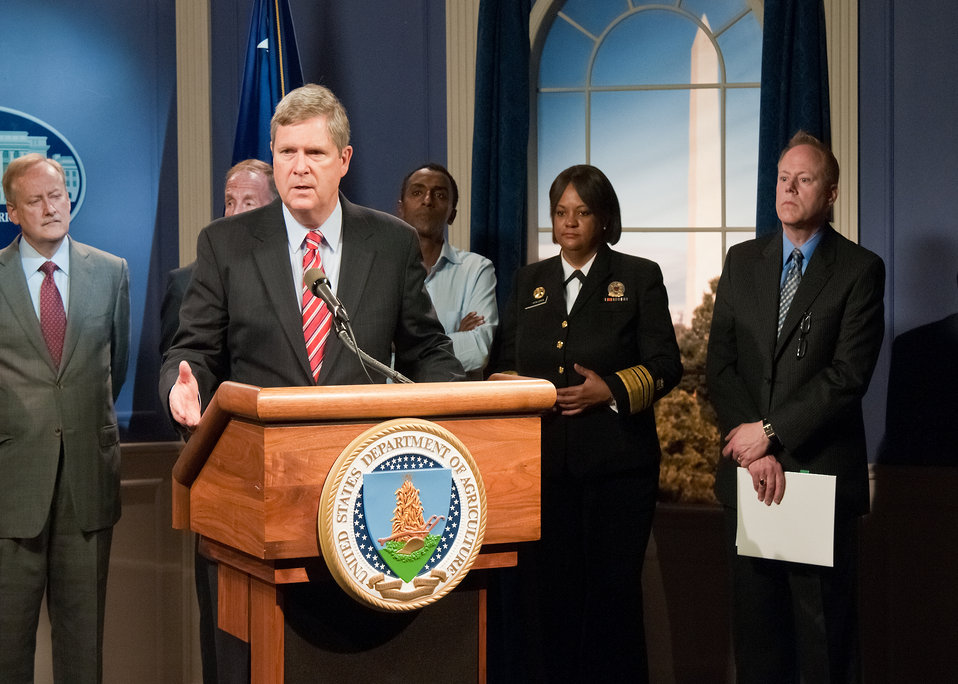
Agriculture Secretary Tom Vilsack (podium) held a press conference directly after the announcement new food icon that will serve as a reminder to help consumers make healthier food choices at the U.S. Department of Agriculture (USDA) on Thursday, June 2, 2011(behind Secretary Vilsack L to R President and CEO, United Fresh Produce Association Tom Stenzel, Lieutenant General US Air Force (Ret.) Norman R. Seip, Chef Marcus Samuelsson, Surgeon General Dr. Regina Benjamin, Deputy Director, Center for Nutrition Policy and Promotion (CNPP) Dr. Robert Post, and shareholders) . First Lady Michelle Obama and Surgeon General Regina Benjamin accompanied Secretary Vilsack at the launch of the new food icon. The White House Child Obesity Task Force called for simple advice to consumers with information to help them make healthy food choices. As a result USDA has introduced the new food icon to replace the MyPyramid image representing the food guide pyramid as the government’s primary food group symbol. The new food icon will be part of a comprehensive nutrition communication initiative that provides consumers with easy-to-understand recommendations, a new website with expanded information and other tools and resources.